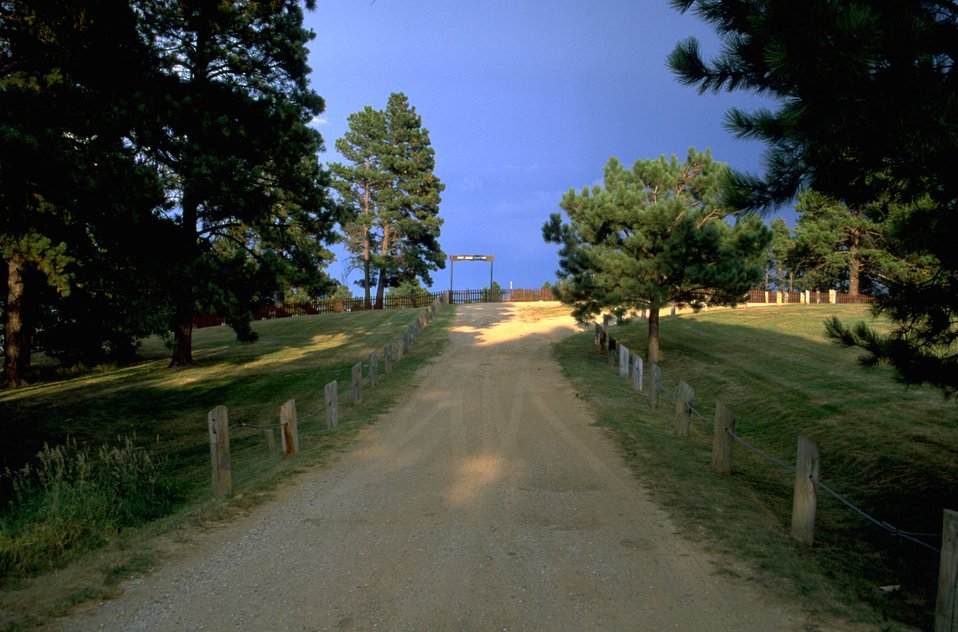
Philltown Road leading to Cemetery at south end of Fort Meade